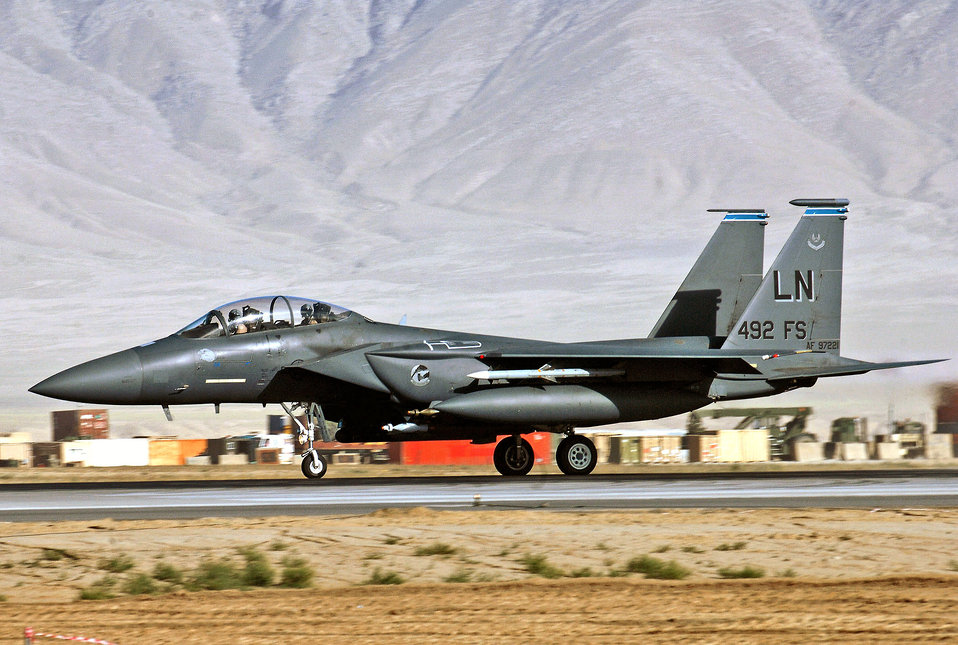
Sept. 7 airpower summary: F-15Es provide armed overwatch

An F-15E Strike Eagle takes off from Bagram Air Base, Afghanistan. F-15Es fly close-air-support missions and provide armed overwatch for Operation Enduring Freedom.